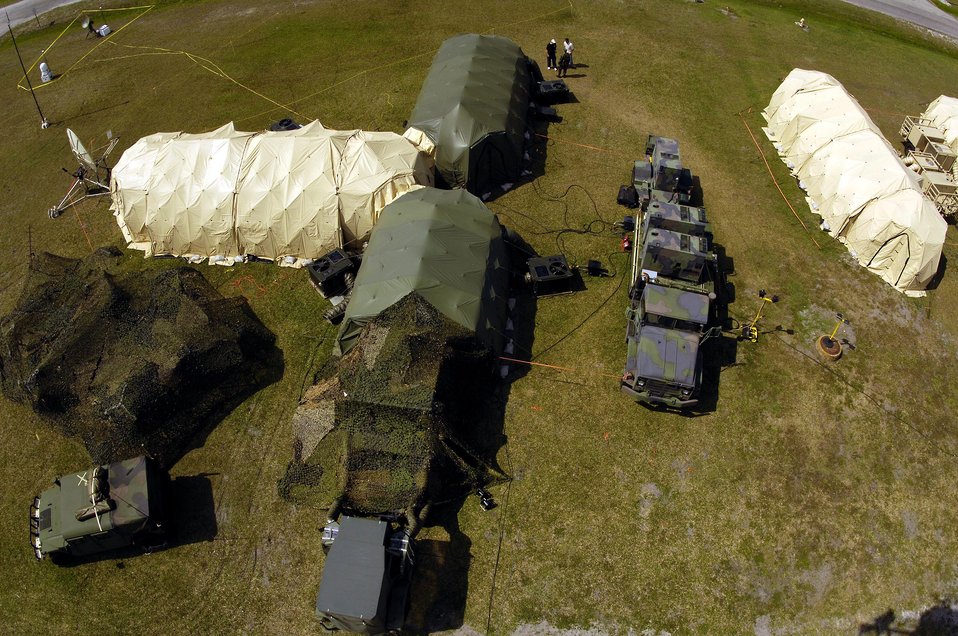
Air Support Ops keep control at Atlantic Strike V

An aerial view of the Air Support Operations Center at Atlantic Strike V April 18 shows how small and mobile the ASOC can be. Atlantic Strike is a semi-annual joint forces training event involving Joint Terminal Attack Controllers from the Air Force, Army and Marines. The event is held at Avon Park Air Ground training Complex in Avon Park, Fla. f Sgt. Stephen J. Otero)